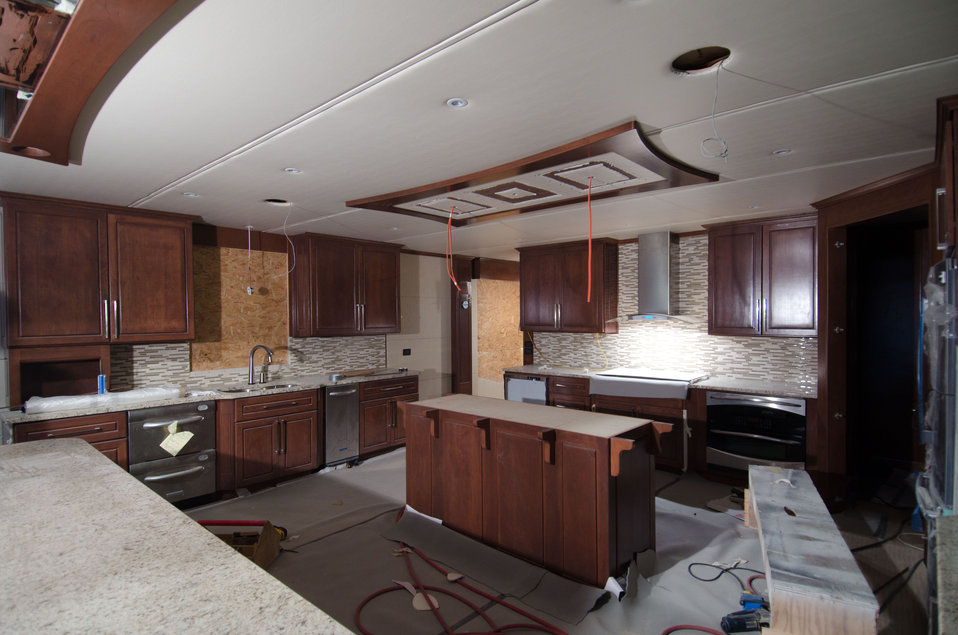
Stardust Industries is using it's expertise in luxury house boats to help retool and redirect Monticello, Kentucky’s houseboat manufacturing industry on Wednesday, July 13, 2011 The houseboat industry has been decimated because of the struggling economy – by using its facilities and manpower to create low-cost housing that is energy efficient. Rural Development obligated $499,000 in Rural Business Enterprise Grant funds to support this unique endeavor. Up until a few years ago, there were several successful houseboat manufacturers in the four-county area surrounding the city of Somerset. Most have now ceased operation or drastically reduced output, which has led to dramatic, long-term job loss. These new energy efficient homes will be constructed in redesigned, refitted houseboat factories using local workers that have been retrained.